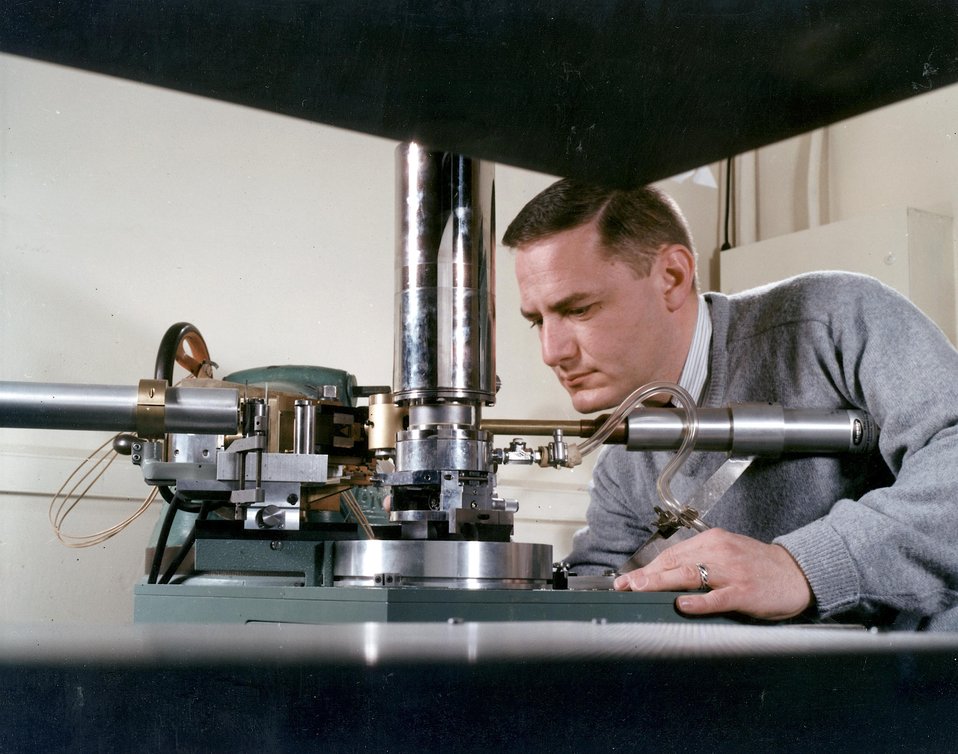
A single crystal of holmium is aligned in the x-ray beam preparatory to low temperature runs at 77 degrees and 23 degrees Kelvin. Monochromatic x-rays reflected from a doubly bent lithium fluoride crystal are directed upon the holmium crystal inside the evacuated berullium windowed cryostat. c. 1967